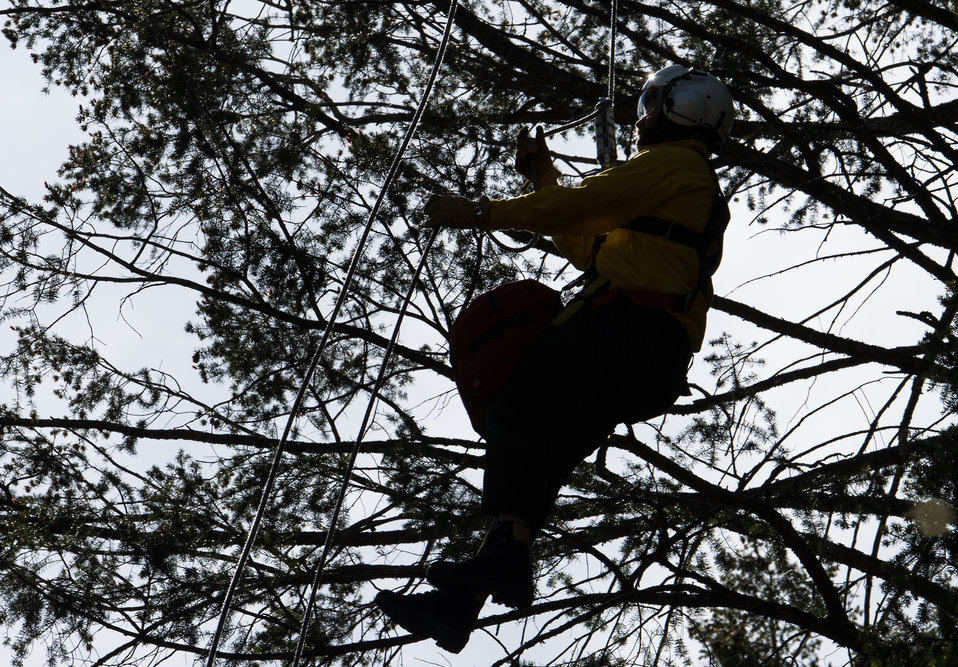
Veteran wildland firefighter rappellers use various techniques to negotiate the wind from the helicopter rotor blades above them, and away from tree branches, beside and below, as they perform a controlled and safe descent at the U.S. Department of Agriculture (USDA) U.S. Forest Service (USFS) National Helicopter Rappel Program’s Rappel Academy at Salmon Air Base in Salmon, ID on Thursday, May 15, 2014. From May 12, 2014, 72 veteran rappellers from all over the nation, 30 support staff, and three helicopters with flight crews attend the training at Salmon Air Base. Participants will rappel into the Perreau Creek area. The annual training is delivered in accordance with the National Rappel Operations Guide; strengthen leadership, teamwork, and communications within the rappel community, and produces quality aerial delivered firefighters for use in fire and aviation operations. The USDA Forest Service National Helicopter Rappel Program’s primary mission is initial attack. Rappel crews may be utilized for large fire support, all hazard incident operations, and resource management objectives.